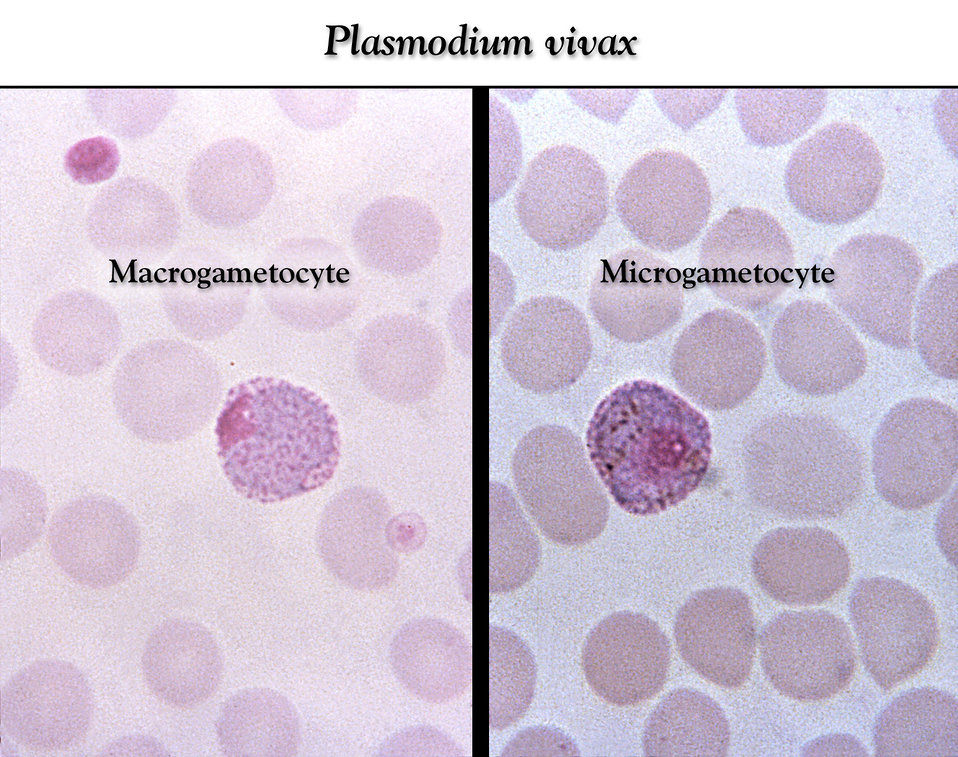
These thin film Giemsa stained micrographs depict a Plasmodium vivax macro- (Lt), and microgametocyte (Rt).